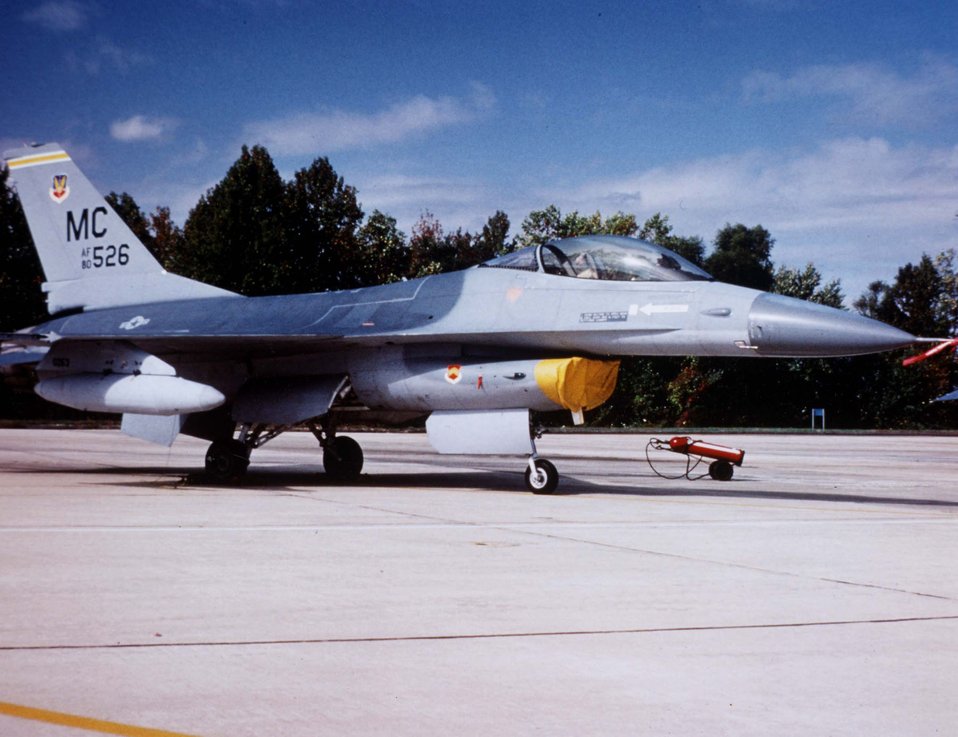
F-16A Fighting Falcon

An F-16A-10 Fighting Falcon from General Dynamics sits on the MacDill Air Force Base, Fla., flightline during the 1980s.